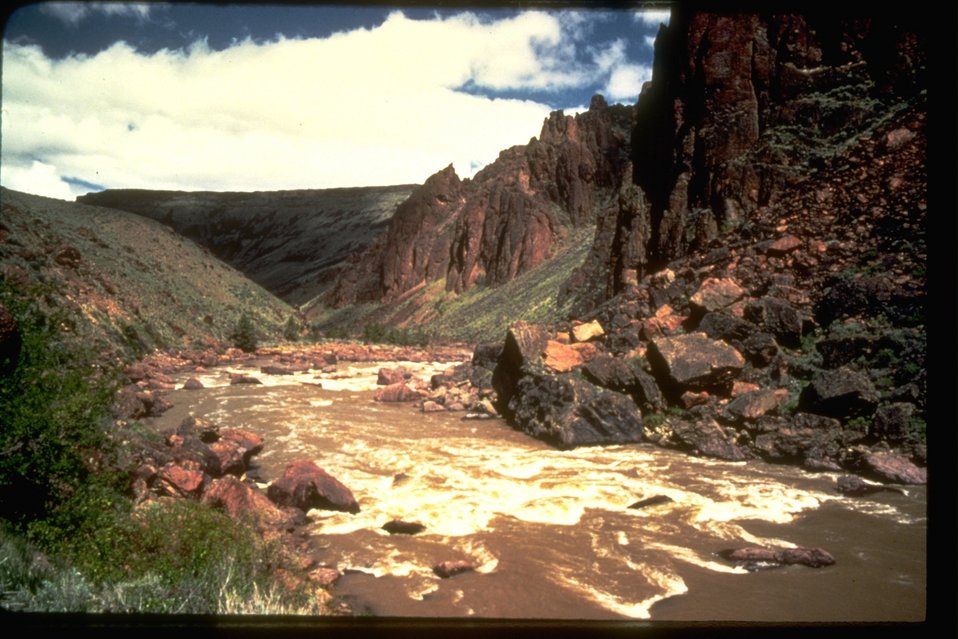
Owyhee River below 3 forks Oregon.